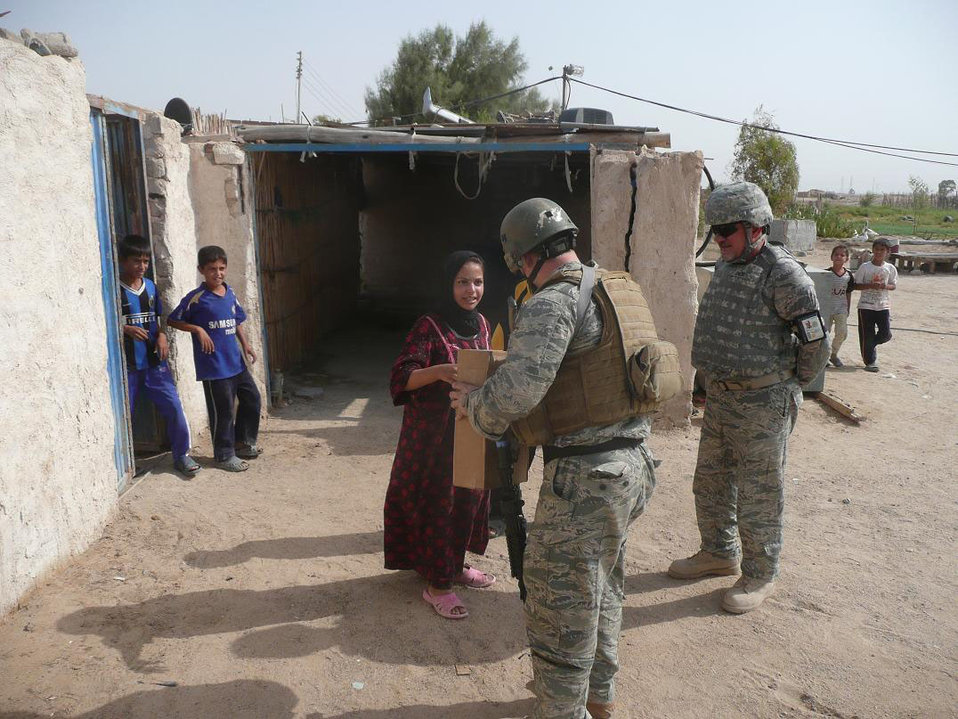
EFP Discovery

Tech. Sgt. Ben Martin, 887th Expeditionary Security Forces Squadron, hands a thank-you gift to a young Iraqi girl Sept. 18, 2009, as an 887th ESFS translator looks on. The girl found and reported an explosively formed penetrator, or EFP, outside of Camp Bucca, Iraq, in an area that 887th ESFS Airmen regularly patrol.